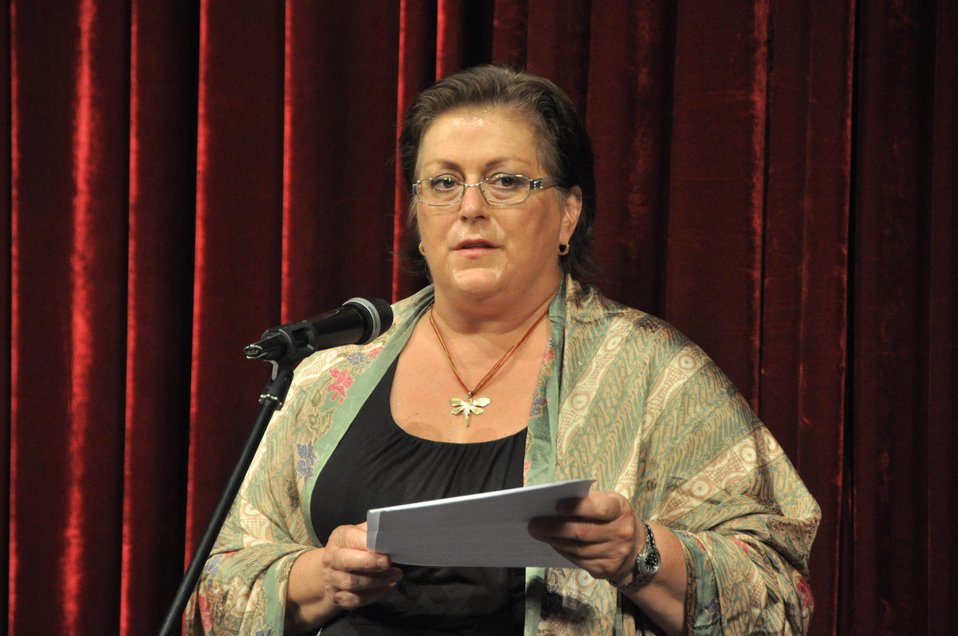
PEPFAR Musical Questions and Exclamations

U.S. Embassy Deputy Chief of Mission Claire Pierangelo speaks at the musical in Hanoi on May 17, 2013.